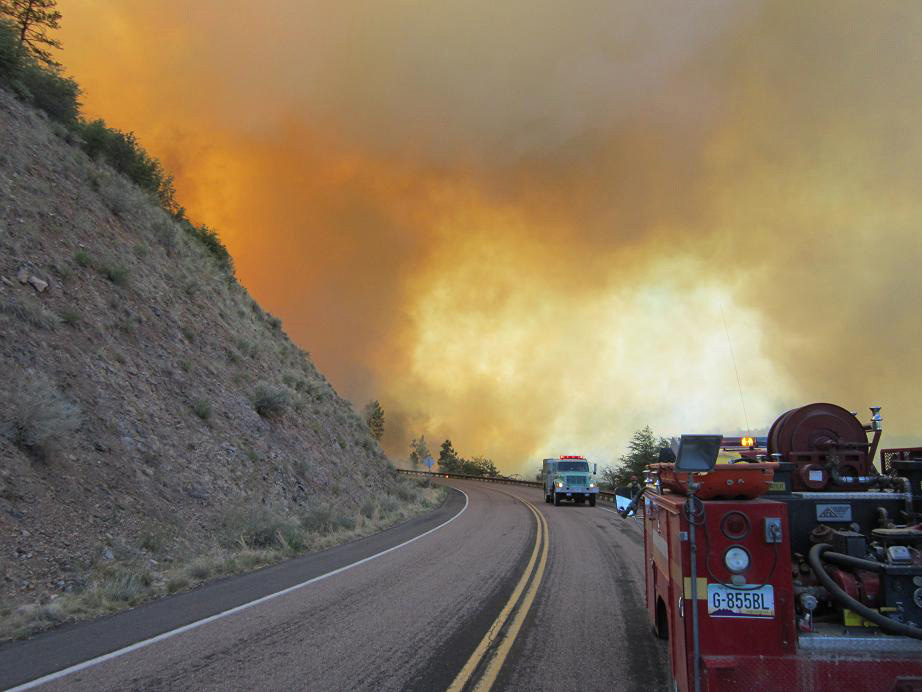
The Poco Wildfire jumps Fire Road 512 in the Tonto National Forest near Young, AZ on June 14, 2012. The wildfire started on June 14, 2012 as a result of human carelessness. The wildfire is 65% contained with over 11, 950 acres burned as of June 25, 2012.